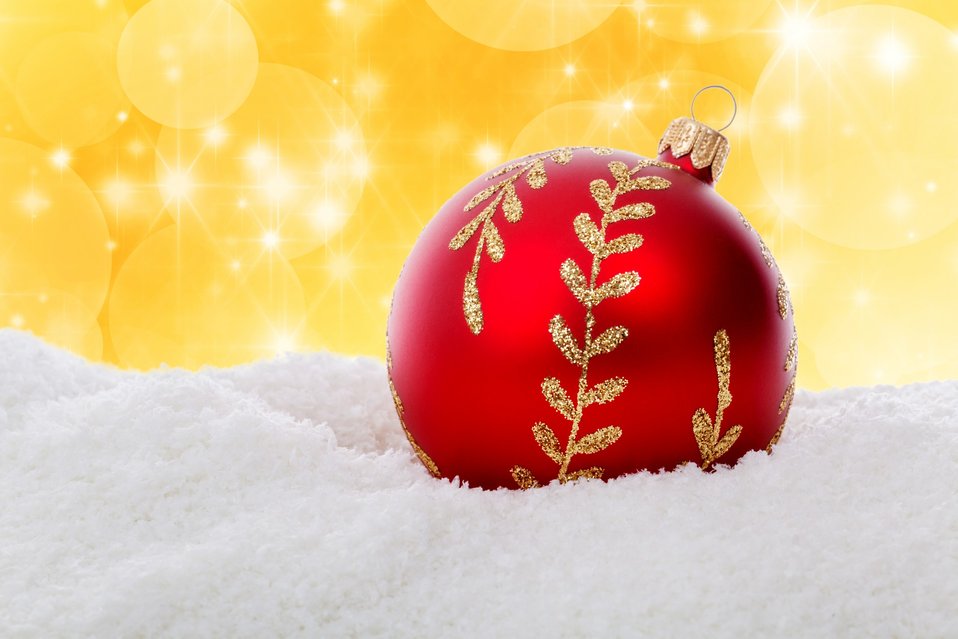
Red christmas ball in snow on golden background.